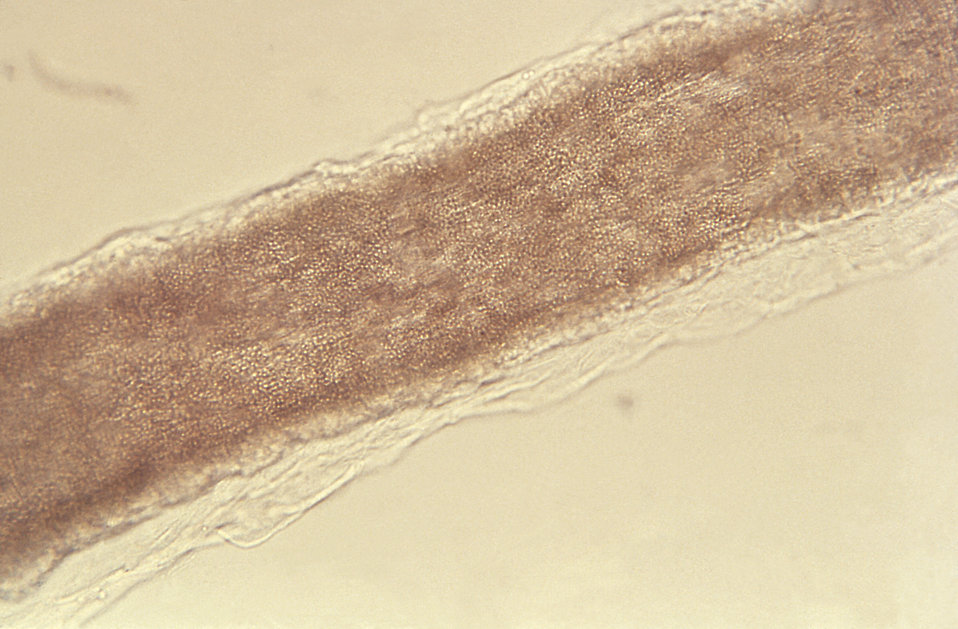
Under a magnification of 475X, this photomicrograph depicts some of the ultrastructural pathologic changes that were exhibited by a hair shaft due to a ringworm infection from the dermatophytic fungal organism, Microsporum audouinni. Note the presence of endorthrix fungal spores within the hair shaft itself.